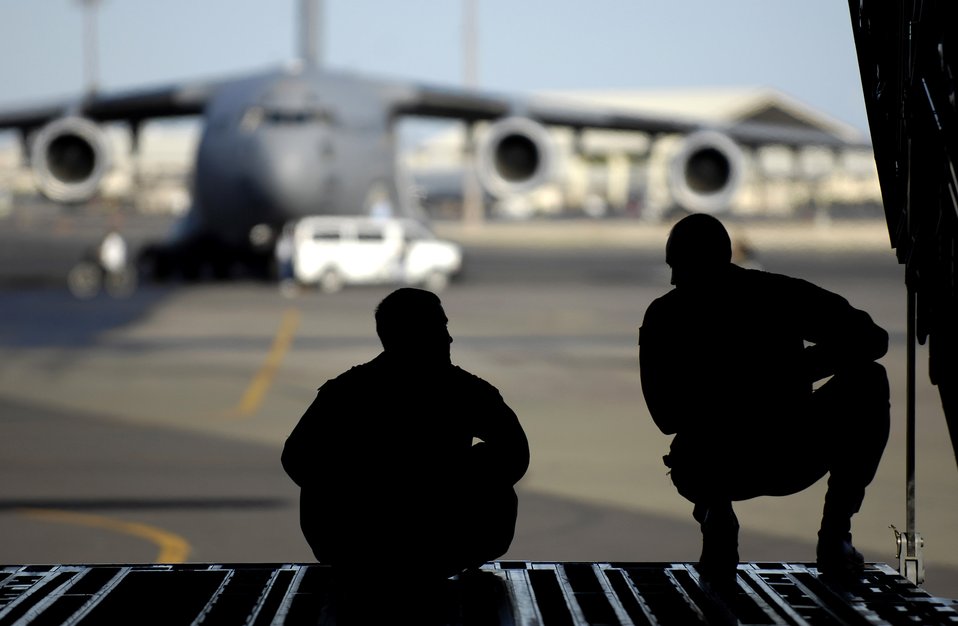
Hickam crew prepares for AMC Rodeo

Maj. Jason Mills and Tech. Sgt. Ansen Lucas discuss techniques for backing their C-17 Globemaster III prior to departing June 22 on a refueling training mission from Hickam Air Force Base, Hawaii. A KC-135 Stratotanker from the 909th Air Refueling Squadron, Kadena Air Base Japan is at Hickam AFB practicing with the C-17 crew from the 535th Airlift Squadron for the 2007 Air Mobility Command Rodeo. Sergeant Lucas is a loadmaster and Major Mills is a pilot with the 535th AS.